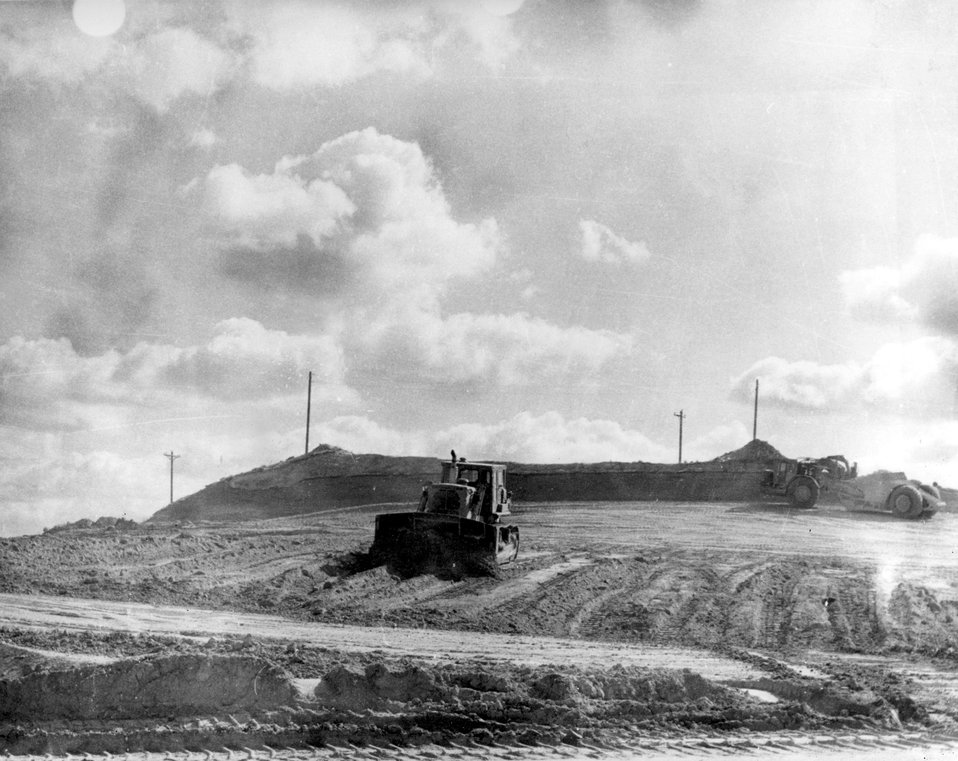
At Union Carbide's uranium mine in the Gas Hills of Wyoming, men, women and machines continue working around the clock to help relieve the energy crisis by producing concentrates for America's nuclear power plants. c. 1976